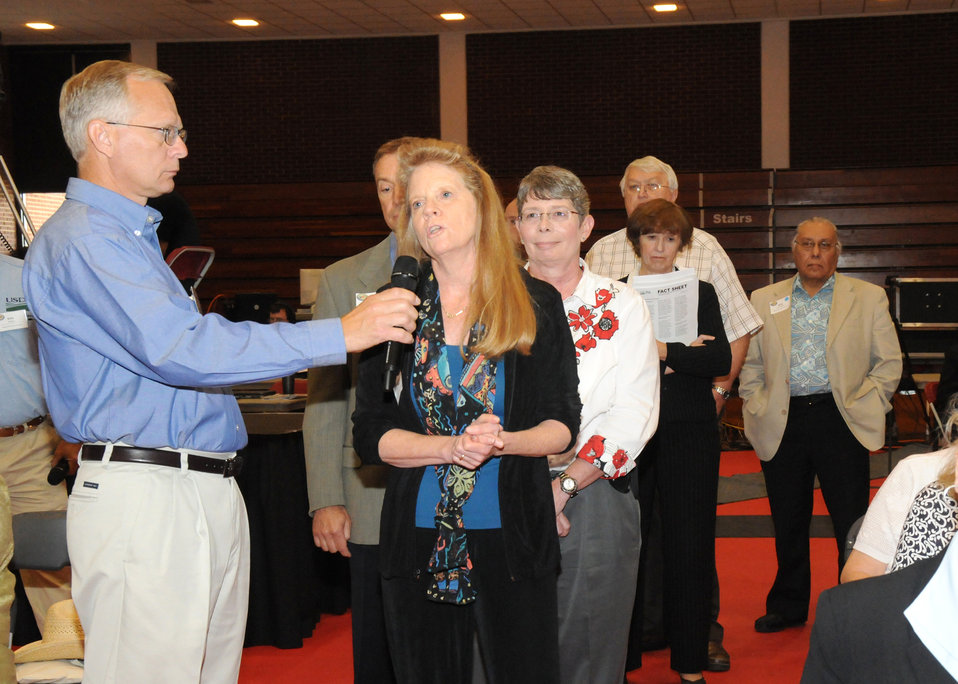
A Dialogue on Rural America was the first discussion panel held at the National Rural Summit held at Jefferson College in Hillsboro, MO., on Thursday, June 3, 2010. Audience participants line up to ask questions of the panelists. USDA photo 10di1386-239